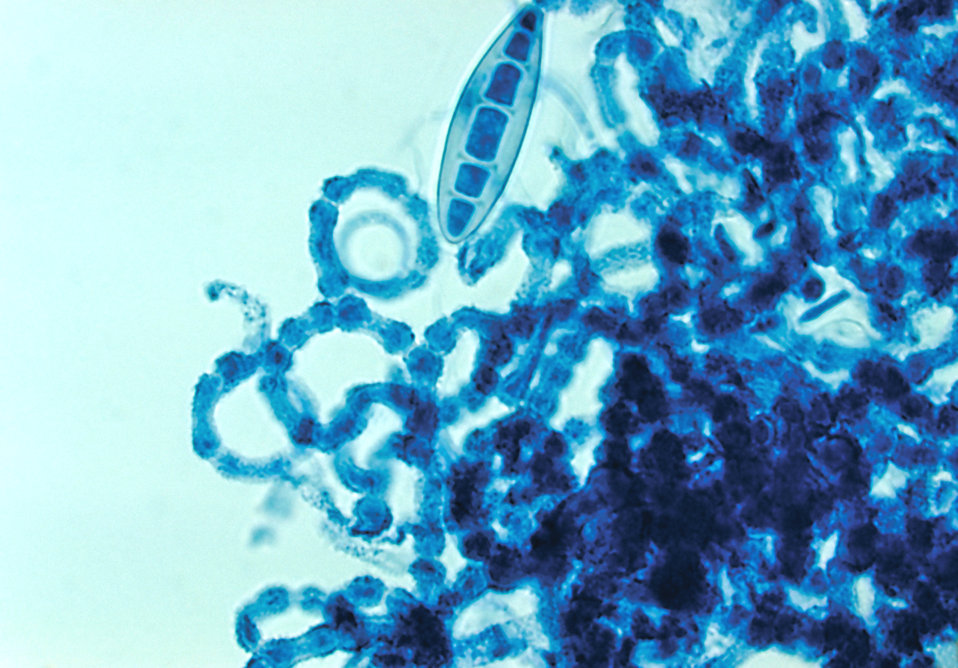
This image depicts the edge of an abortive cleistothecium of Trichophyton ajelloi, formerly Keratinomyces ajelloi.